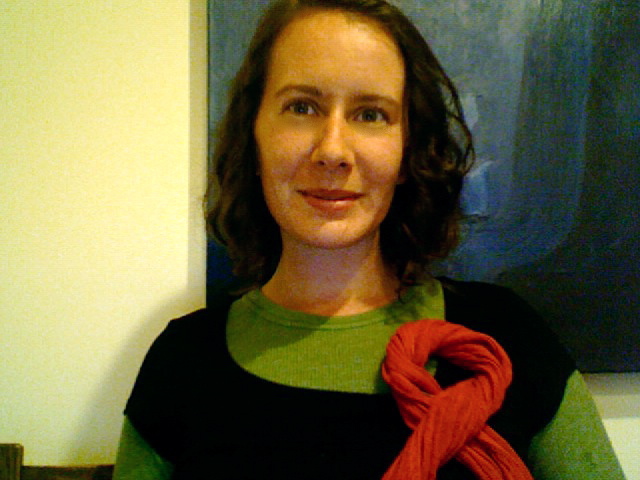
JHF